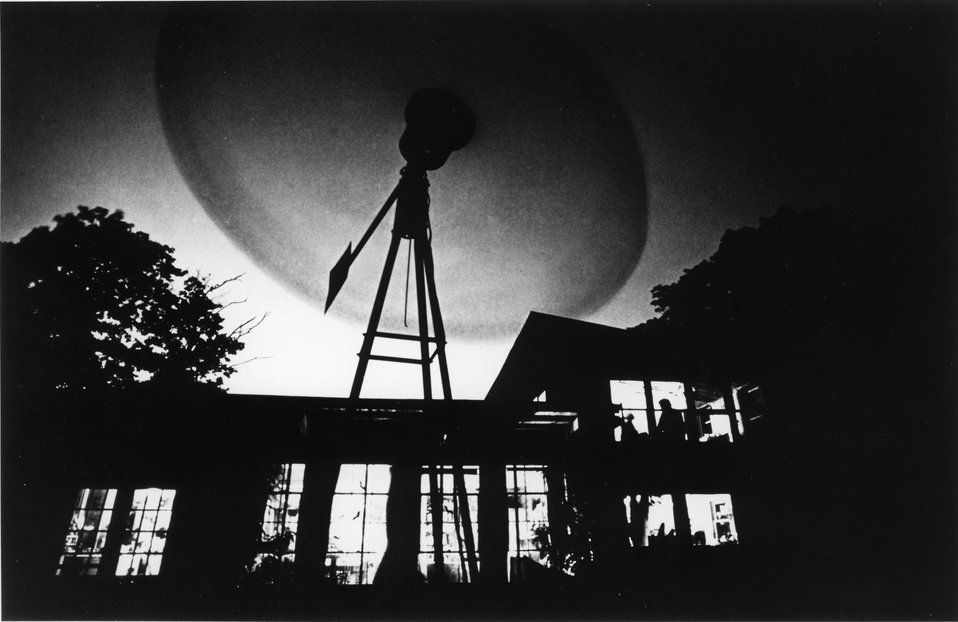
When Henry Clews moved his family to a Maine hilltop in 1973, the power company wanted $3,000 to hook him up. Instead Clews set up two wind-driven generators; 20 six-volt batteries and 60 two-volt batteries store power for periods of calm, and a gasoline-fed generator serves as backup. c. undated